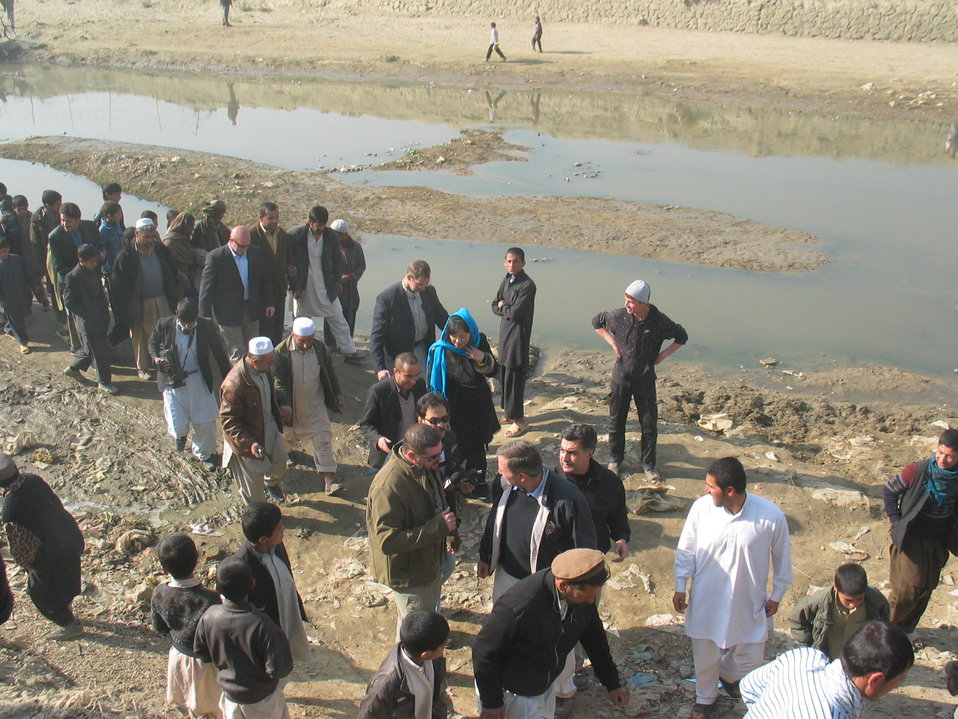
Kabul River Bridge Renovation, December 3, 2010